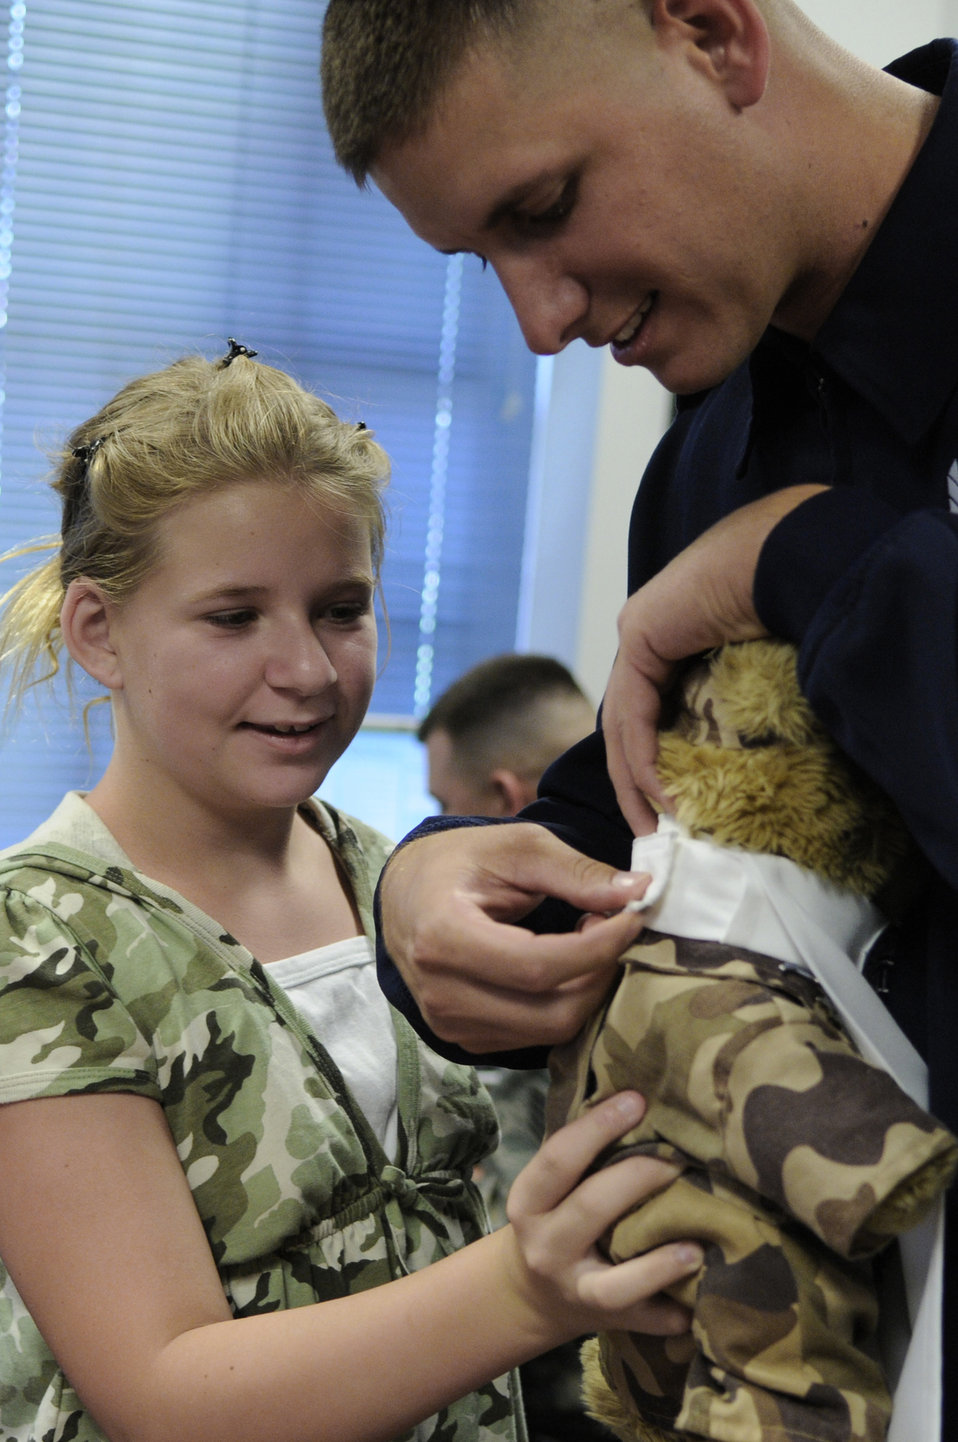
Bolling officials welcome Hero Hugs founder with open arms

Bailey Reese, founder and president of the nonprofit organization Hero Hugs, and Staff Sgt. Michael Doss, attach